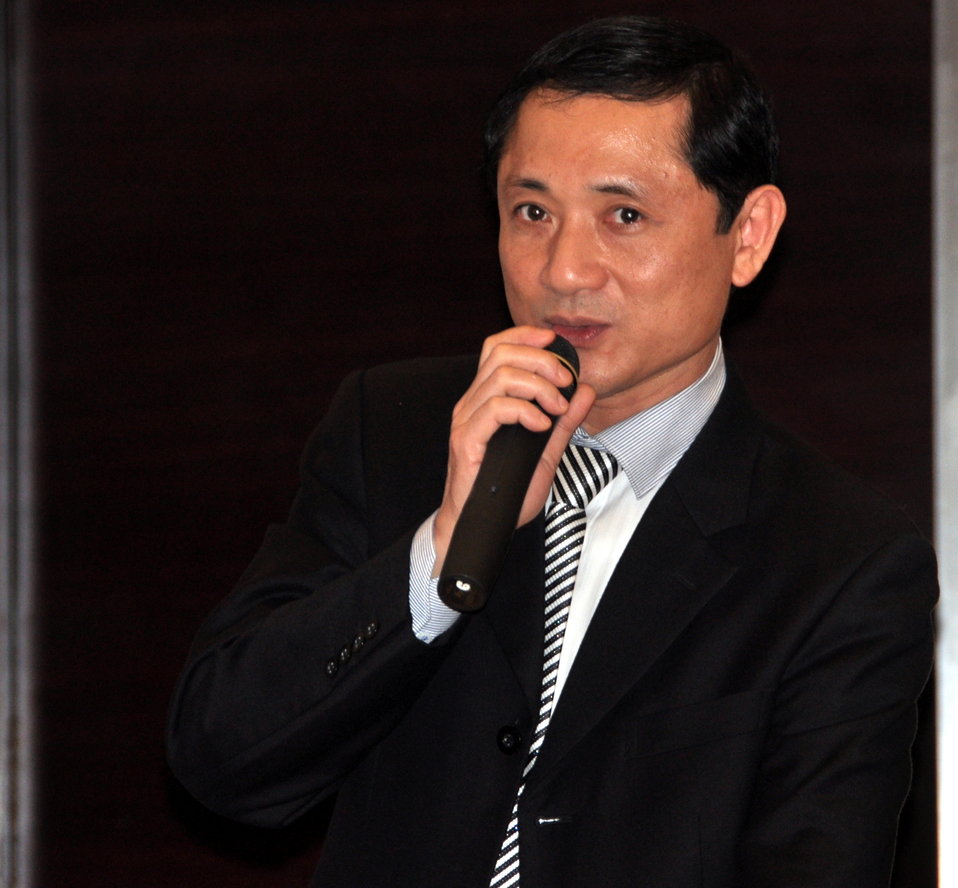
Mr. Nguyen Xuan Tien, Deputy Director General of the Foreign Economic Relations Department, Ministry of Planning and Investment, Speaks at the Danang Stakholder Meeting

Environmental Remediation of Dioxin Contamination at Danang Airport

Danang, Vietnam
January 23, 2013
Photos @USAIDVietnam